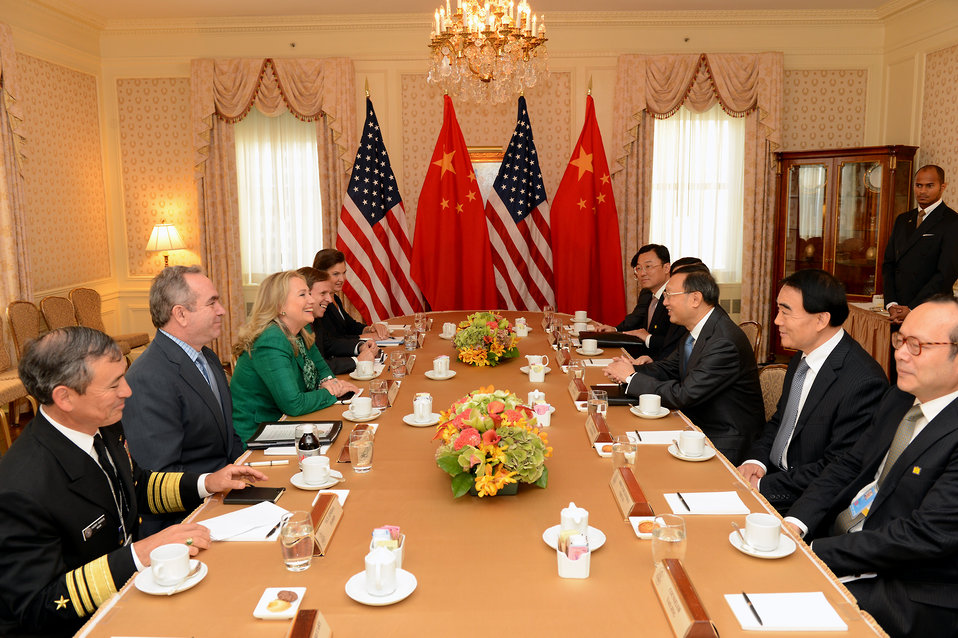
Secretary Clinton Meets With Chinese Foreign Minister Yang Jiechi

U.S. Secretary of State Hillary Rodham Clinton meets with Chinese Foreign Minister Yang Jiechi in New York, New York on September 27, 2012.